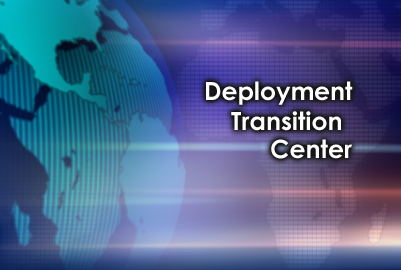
Deployment Transition Center